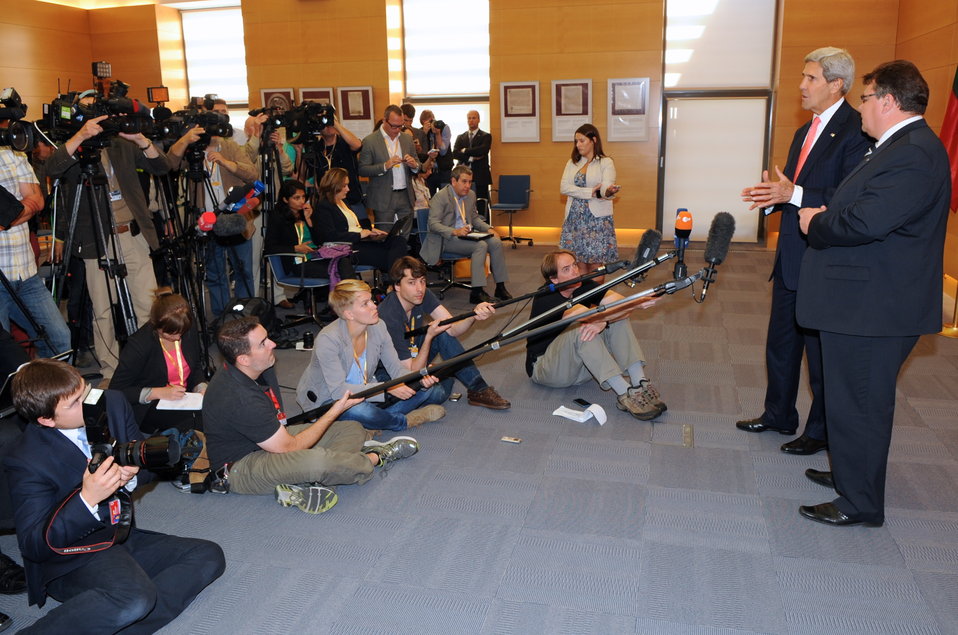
Secretary Kerry and Lithuanian Foreign Minister Linkevičius Speak to the Press

U.S. Secretary of State John Kerry and Lithuanian Foreign Minister Linas Linkevičius speak to the press after a meeting at the Ministry of Foreign Affairs in Vilnius, Lithuania on September 7, 2013.